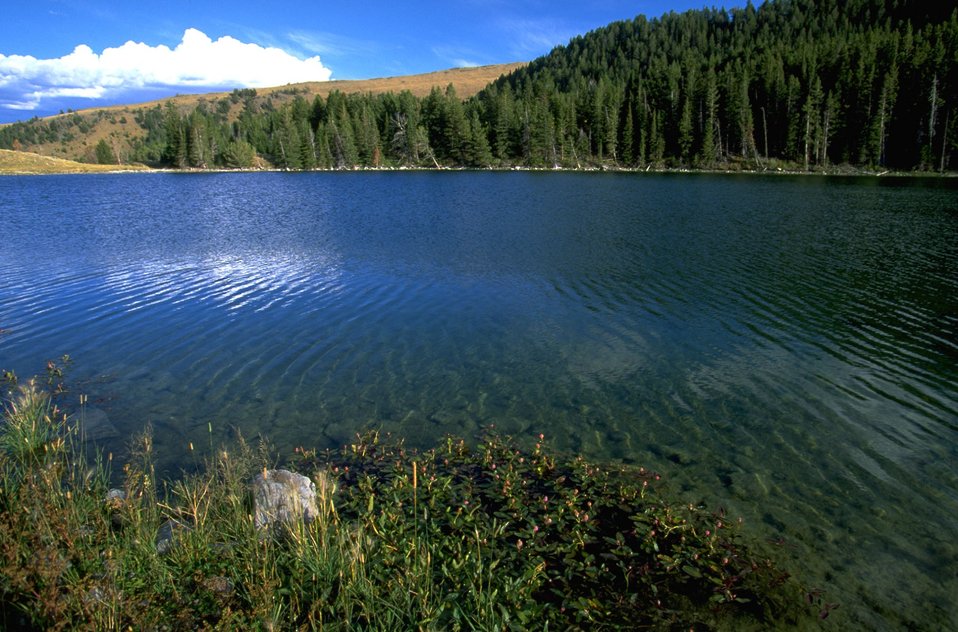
Axolotl Lake with clouds reflecting on the water and lillies in the foreground